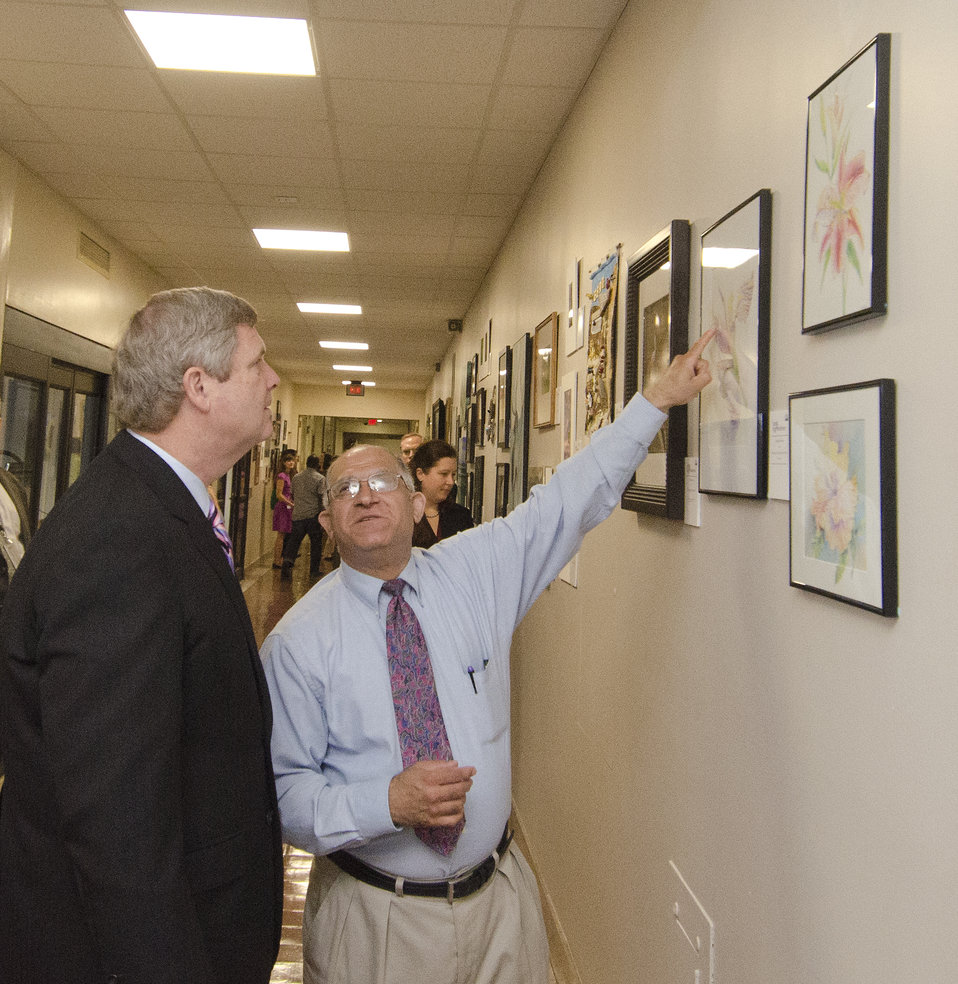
Morgan Arvaneh discusses his artwork with Agriculture Secretary Tom Vilsack during his visit to the gallery of winning entries and some of the employee artists from the inaugural competition for Art and Agriculture, Thursday, May 31, 2012, in the South Building, Washington, D.C. U.S. Department of Agriculture (USDA) full-time and part-time employees submitted art based on ten agricultural themes. The event was part of USDA's 150th Anniversary celebration and the winning artwork is on display from May 15 through December 31, 2012. Artistic expression is a creative outlet that is vital for an individual to grow and develop in their environment.